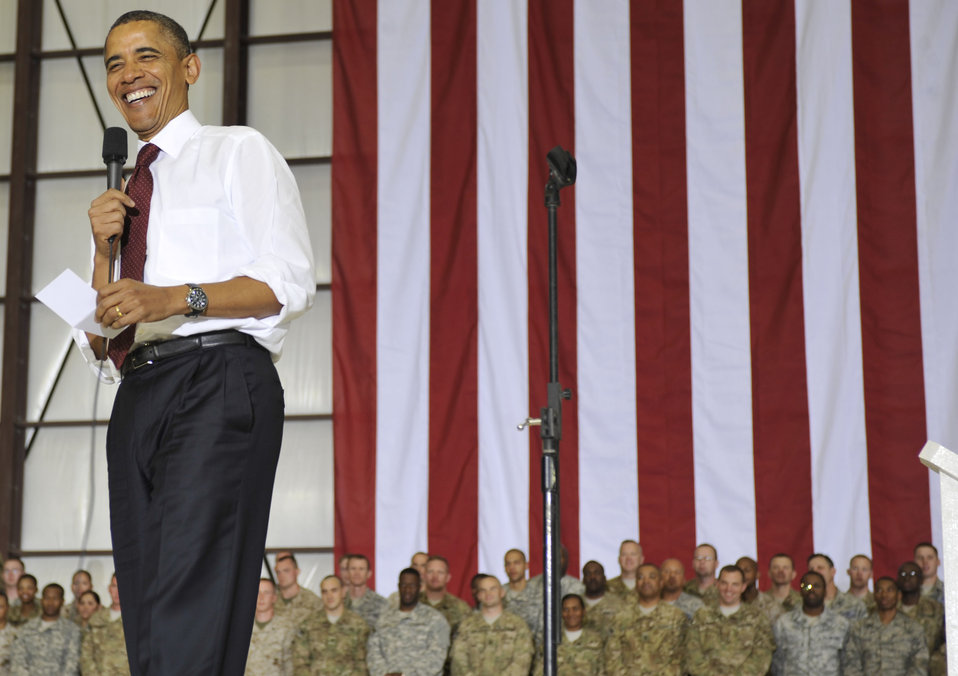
Obama makes surprise visit to Bagram Airfield

President Barack Obama visited Bagram Airfield, Afghanistan, May 1, 2012, to greet Soldiers, Sailors, Airmen and Marines on the anniversary of the death of al-Qaida leader Osama bin Laden. Obama told the crowd that he is proud of them and that many of the positive events in Afghanistan occurred in part because of the efforts of the U.S. armed services.